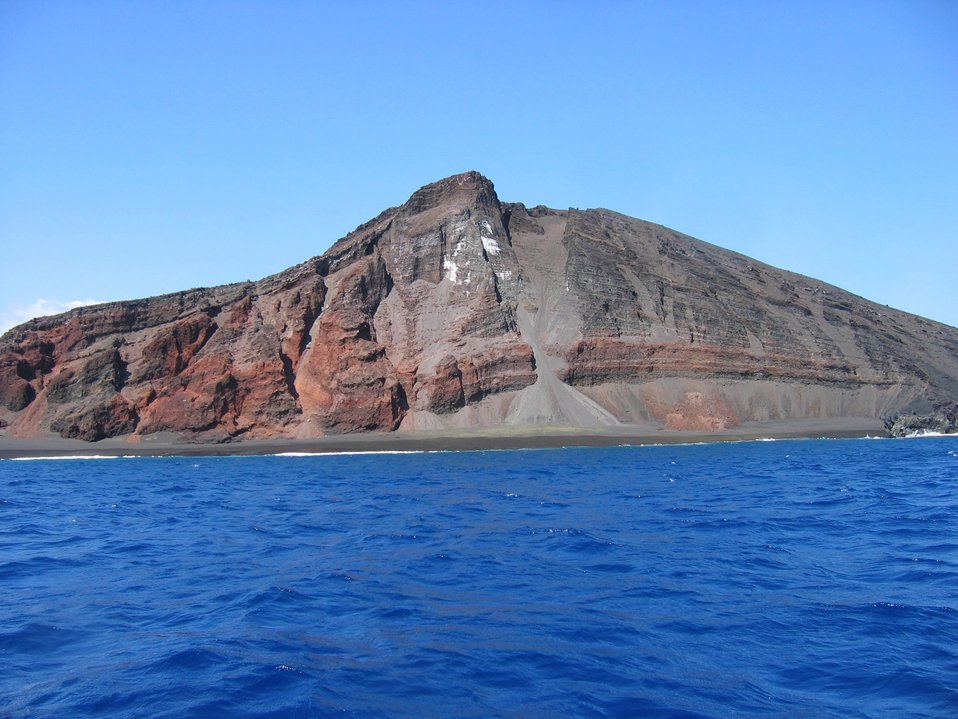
Interior structure of an eroded volcanic cone where it meets the sea.